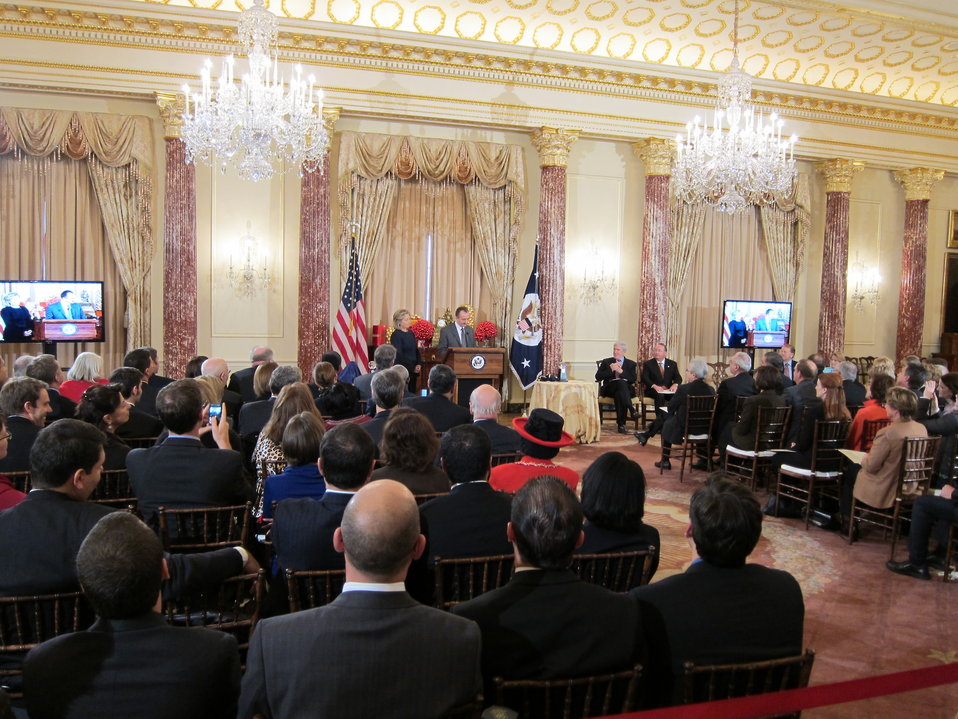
Secretary Clinton Welcomes Mars, Inc. President Grant Reid

U.S. Secretary of State Hillary Rodham Clinton welcomes Mars, Inc., President Grant Reid at the Secretary's Award for Corporate Excellence (ACE) ceremony at the U.S. Department of State in Washington, D.C., on December 17, 2010.